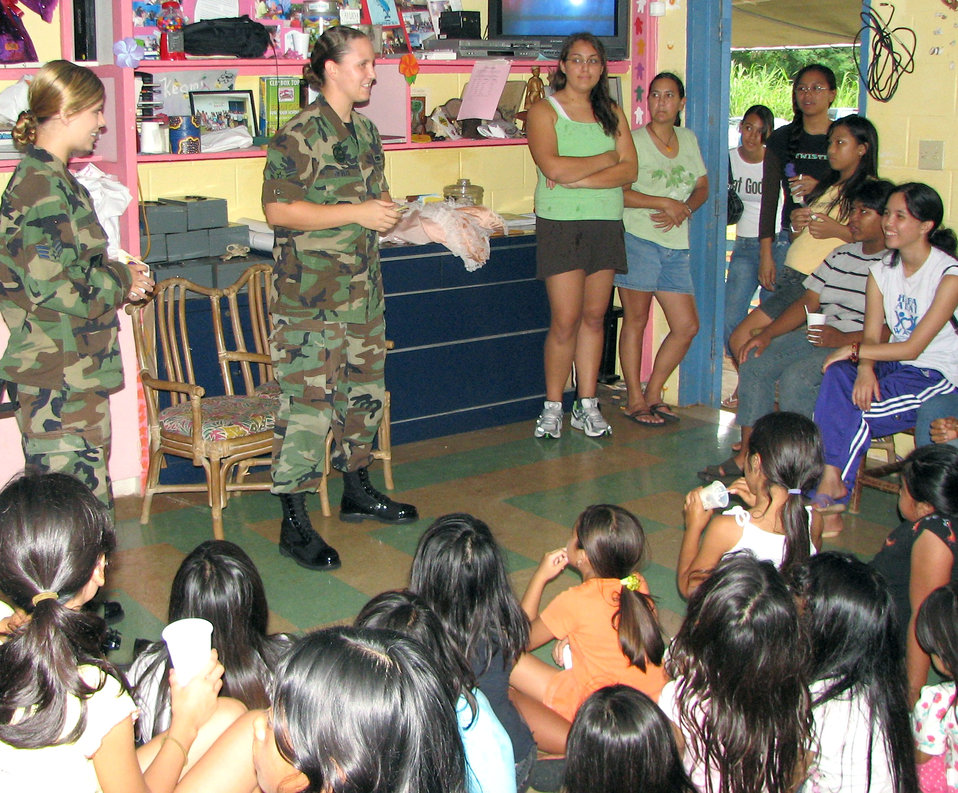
Positive role models

Airman 1st Class Ann Deveci (right) describes her job as an F-15E Strike Eagle weapons load crew member during a visit to Guam's Island Girl Power event Aug. 19 near Andersen Air Force Base as Senior Airman Sarah Lyons listens. The Airmen spoke to more than 20 girls, ages 7 to 14, about the Air Force. Island Girl Power is a nonprofit organization aimed at improving girls' lives with activities and positive female role models in the community. The Airmen are assigned to the 90th Expeditionary Aircraft Maintenance Unit. Airman Lyons is a fuel systems journeyman.